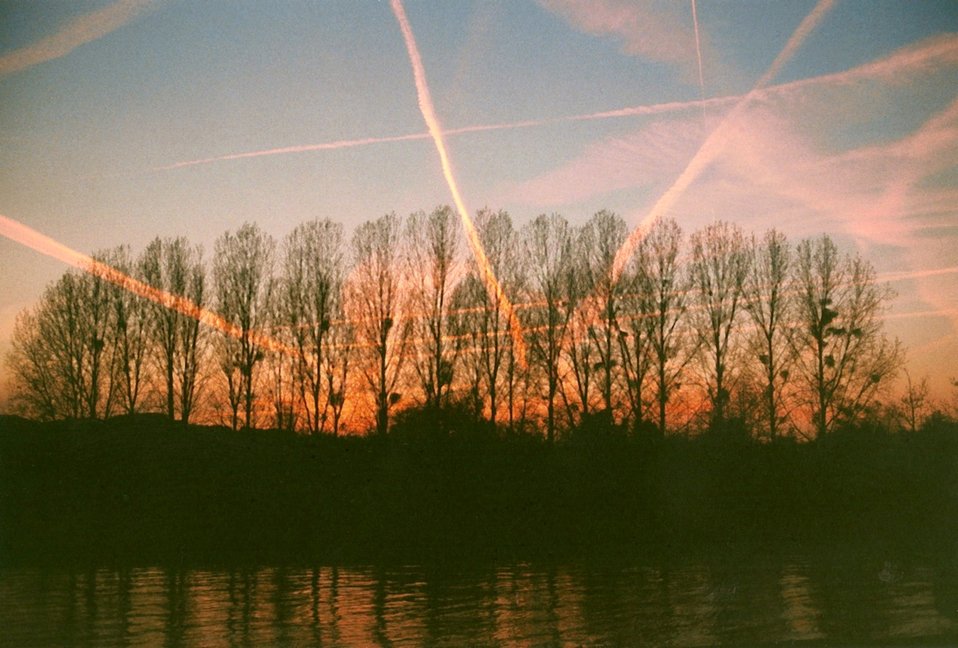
L'île de Dave. Eigen opname.